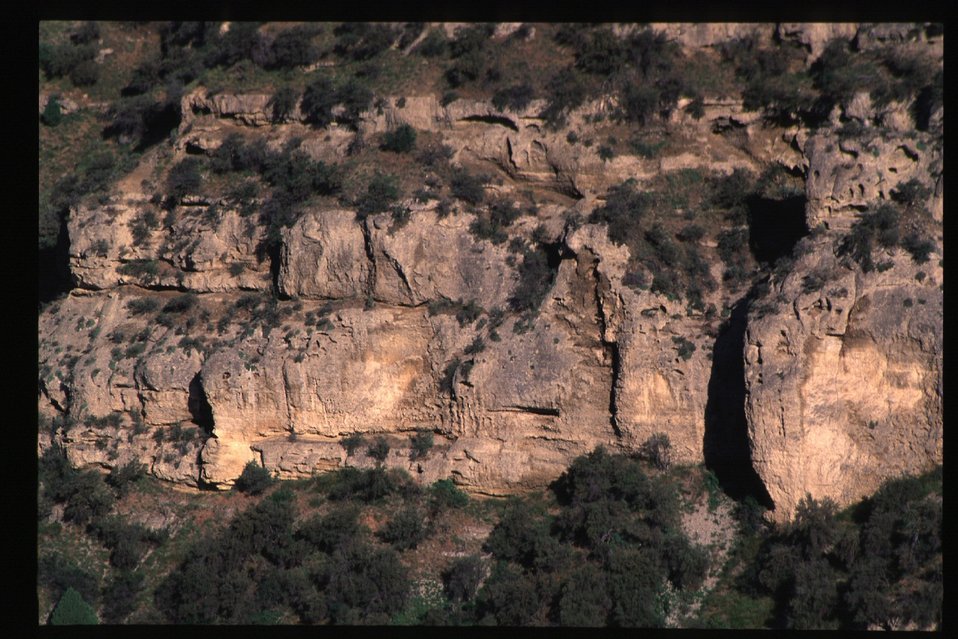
Scenic Vista South Snake River USRD Upper Snake River District